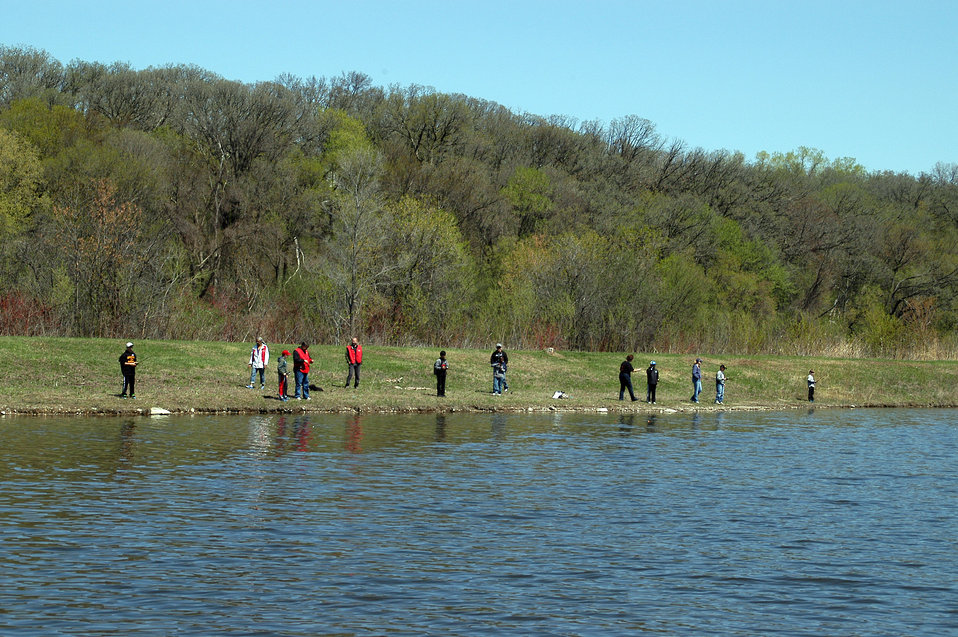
Fishers in the distance

Volunteers and students can be seen fishing all around the Bass ponds.